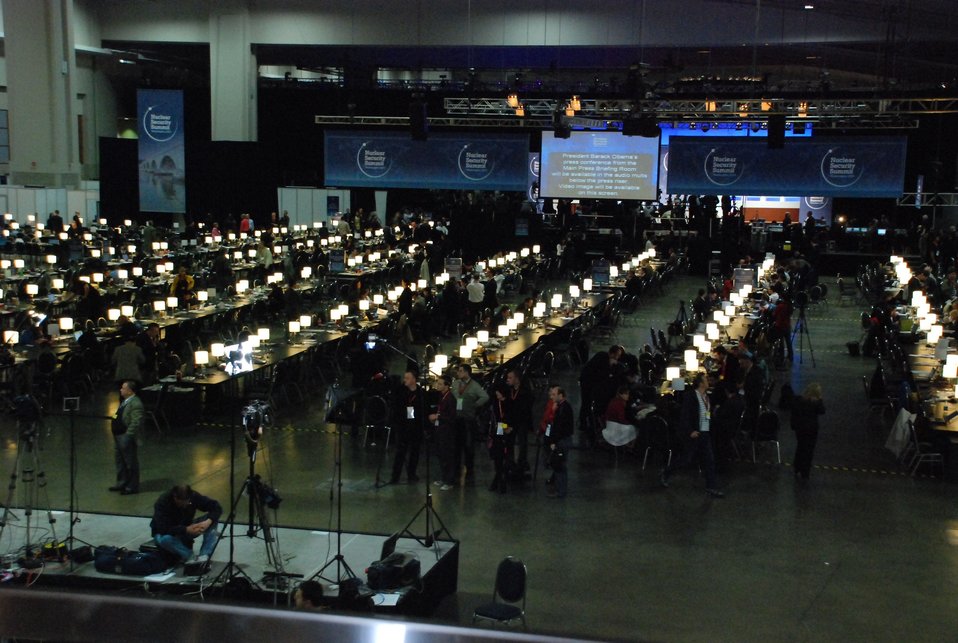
View of the Nuclear Security Summit

A portrait of the Nuclear Security Summit at the Ronald Reagan Building in Washington, D.C., April 13, 2010.